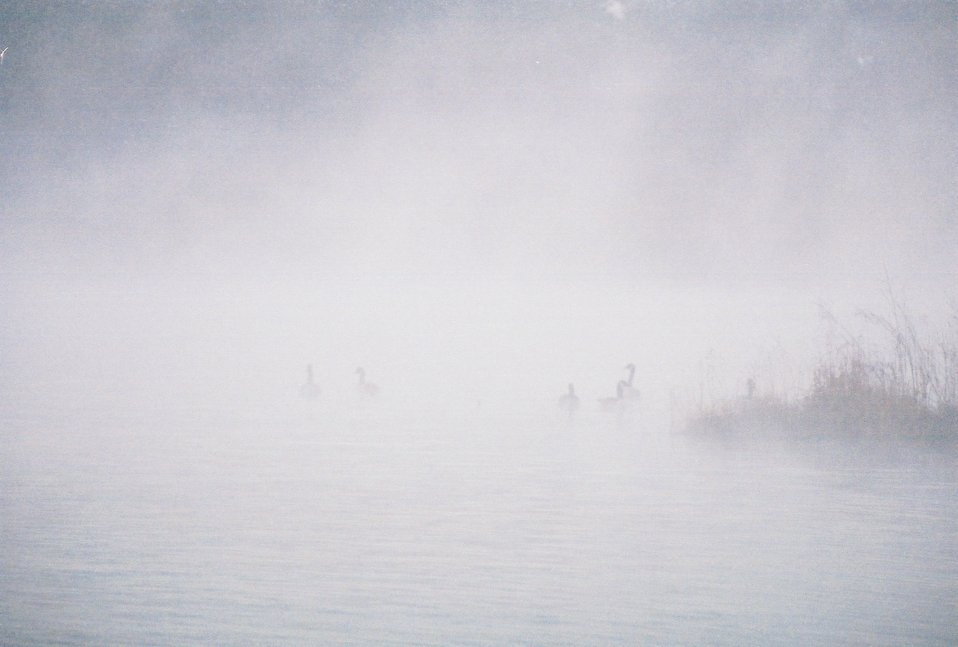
Uploaded by request of Cody McCandless

Taken at Camp Ita Kana, Mississippi

This is an early morning shot of geese on the lake at camp.